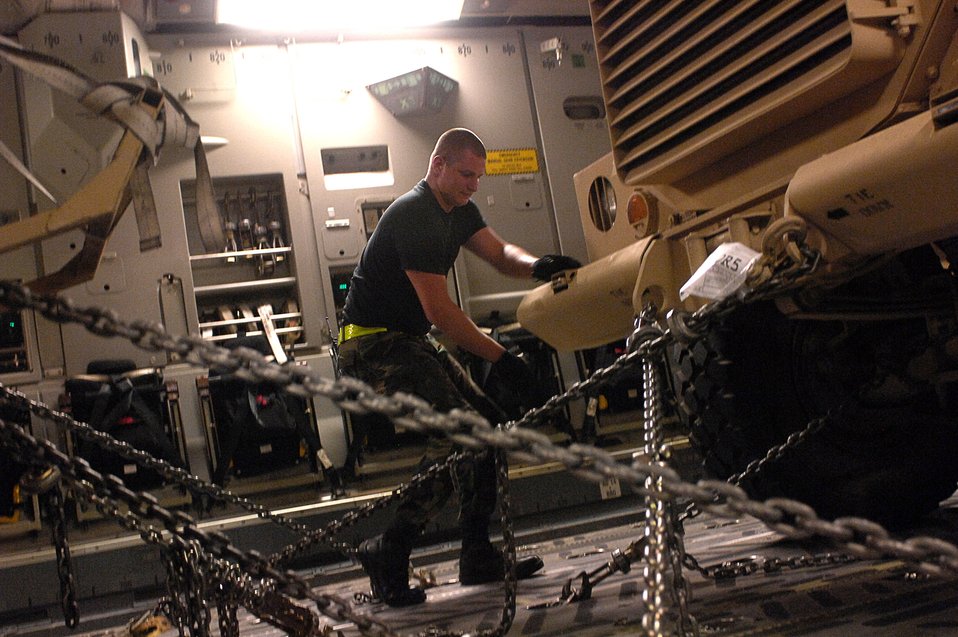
Destination: Iraq

Airman 1st Class Michael Purcell chains down a Mine Resistant Ambush Protected armored vehicle on a C-17 Globemaster III at Charleston Air Force Base, S.C., for shipment to Iraq July 28. An estimated 3,500 MRAP vehicles are expected to be in Iraq by Dec. 31. Airman Purcell is assigned to the 437th Aerial Port Squadron.